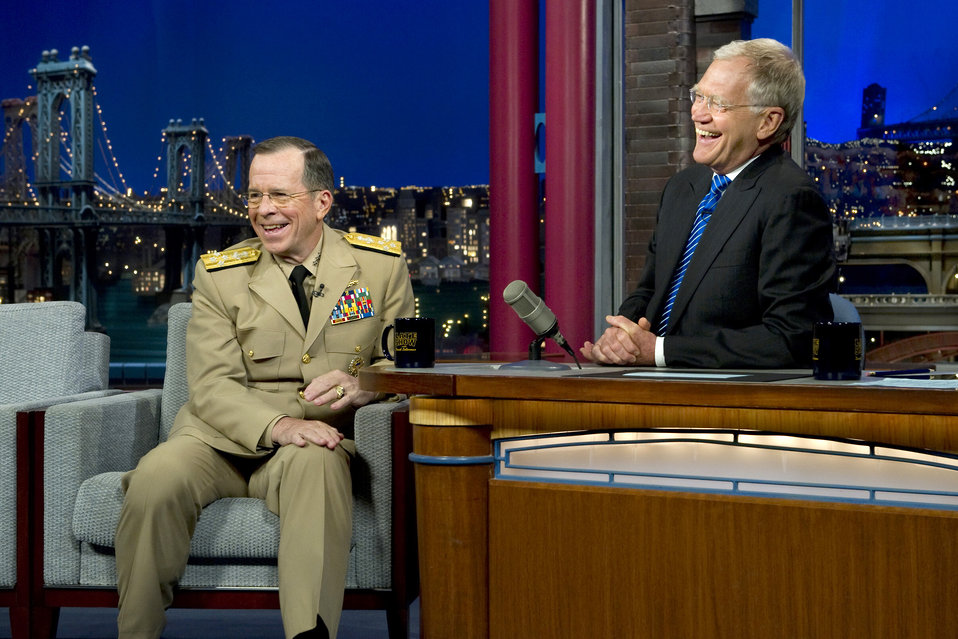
CJCS on Letterman

Navy Adm. Mike Mullen, the chairman of the Joint Chiefs of Staff, shares a laugh with host David Letterman June 13, 2011, during an interview on the